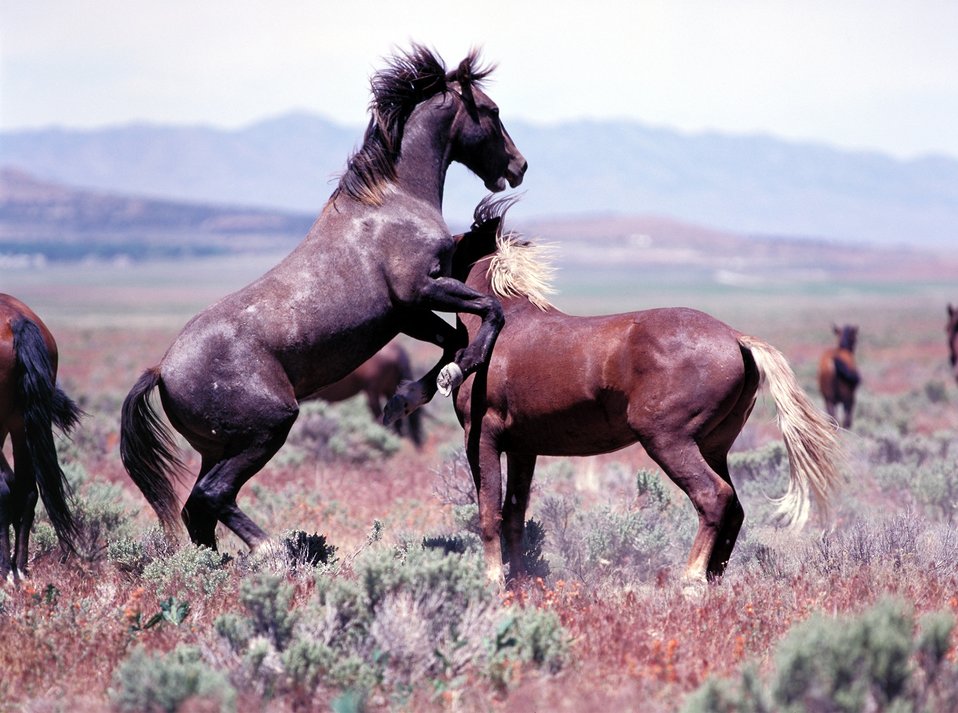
Onaqui Herd near Dugway, Utah.